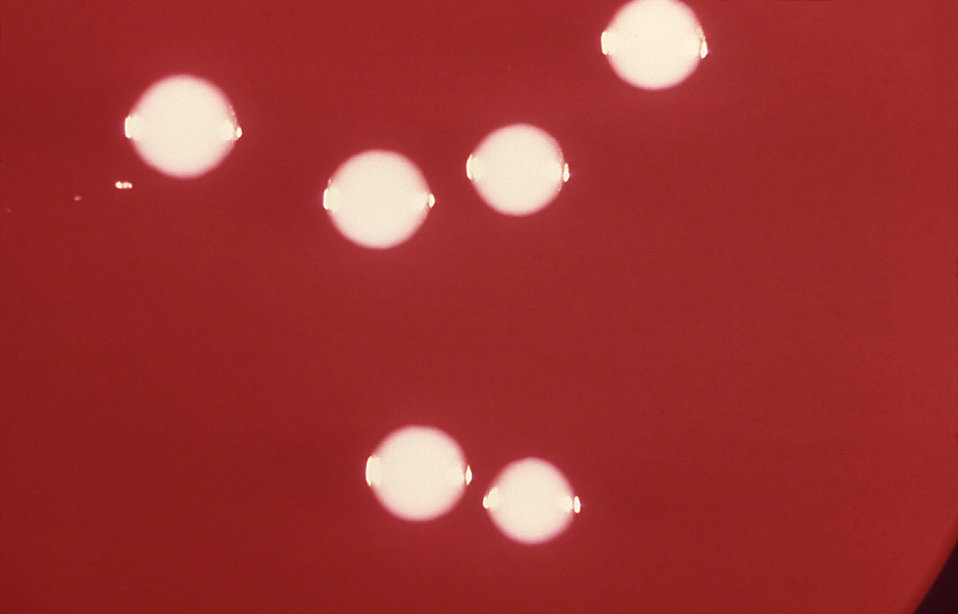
After 72 hours of growth, and under a relatively low magnification of 7.5X, this blood agar plate (BAP) produced colonies of Eubacterium alactolyticus bacteria.